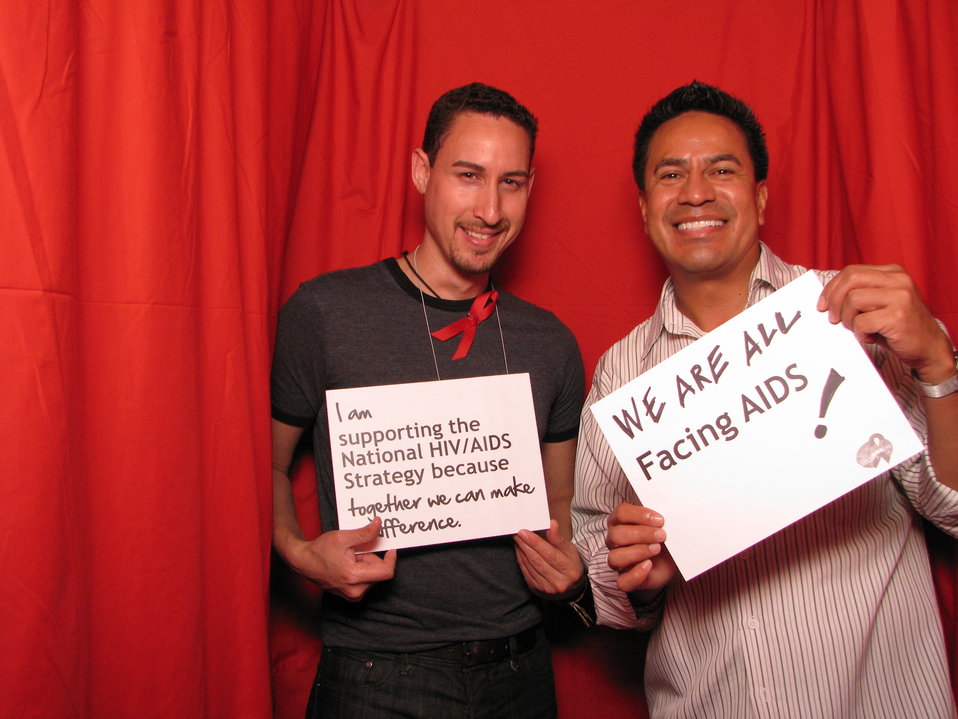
WE ARE ALL FACING AIDS! I am supporting the National HIV/AIDS Strategy because together we can make a difference.

From the AIDS.gov photo booth at the U.S. Conference on AIDS, September 2010 (Orlando, FL).